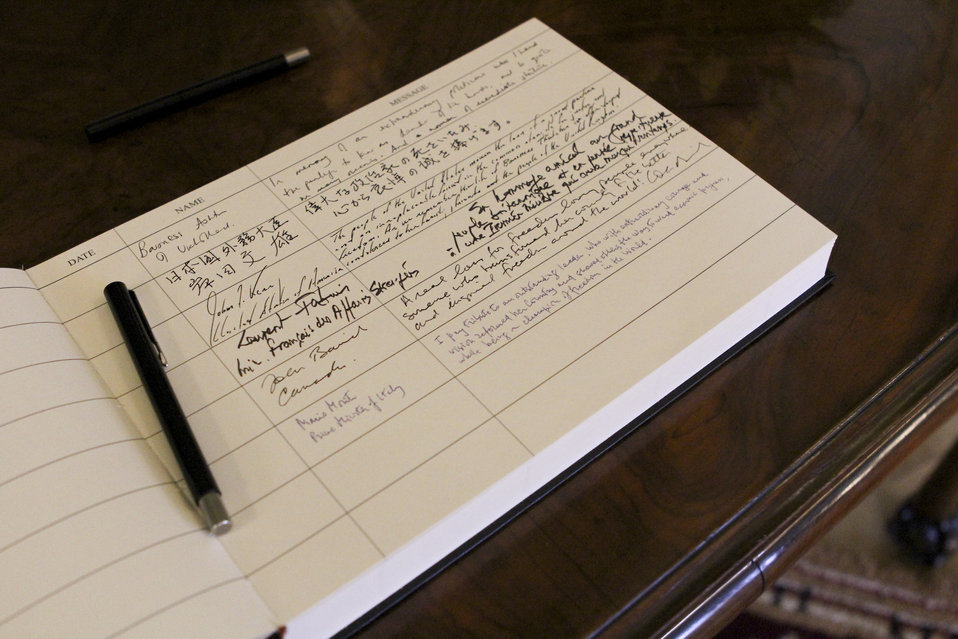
Secretary Kerry's Entry in Condolence Book for Former British Prime Minister Thatcher

U.S. Secretary of State John Kerry's entry in the condolence book for former British Prime Minister Margaret Thatcher in London, United Kingdom, April 11, 2013.